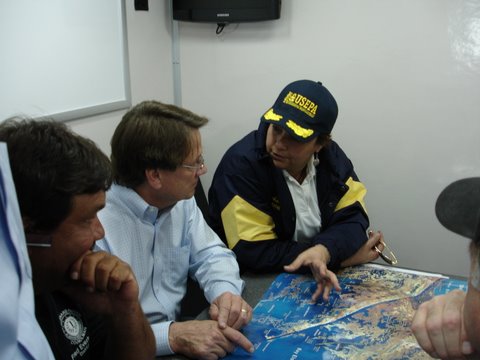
Administrator Lisa Jackson Discussing EPA Response

May 2, 2010 – President Barack Obama and EPA Administrator Lisa Jackson meets with officials in Louisiana to address the government response to the oil spill.